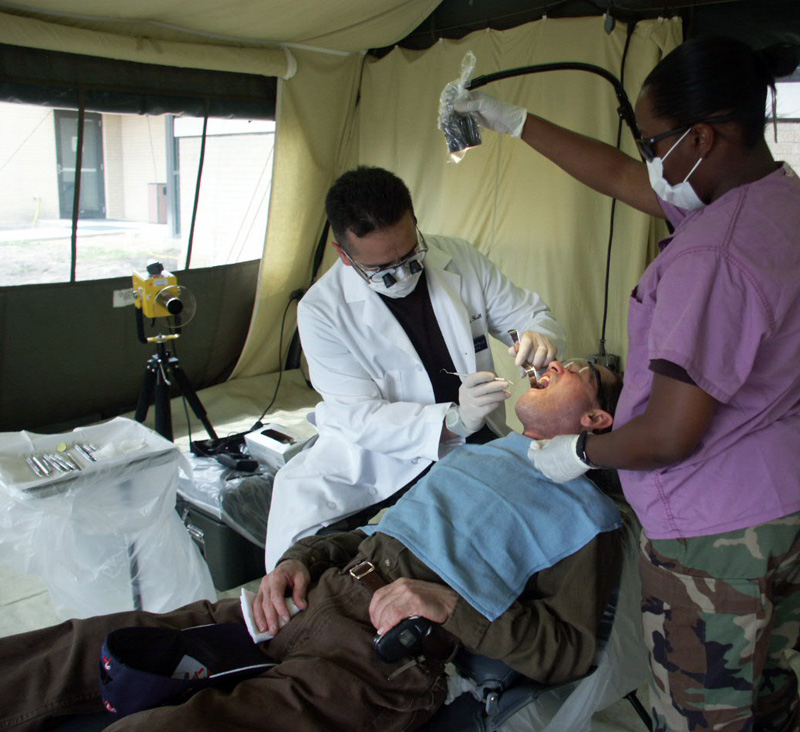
Dental specialists train to deploy

Periodontal resident Maj. (Dr.) Jesse Murillo works on Robustino Rodriguez with dental assistant Staff Sgt. Letrice Mitchell on Thursday, April 6, 2006. The patient, a retired Army staff sergeant, volunteered to take part in the expeditionary field dental training at Lackland Air Force Base, Texas, April 3 through 7.